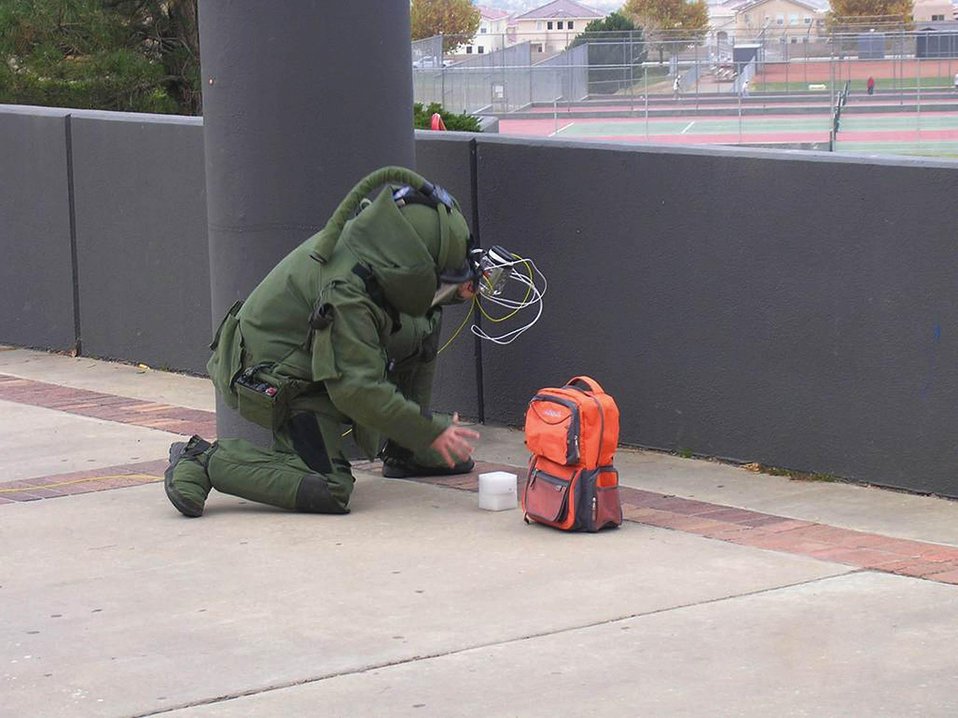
TECHNICIAN PARTICIPATES DURING AN OPERATION AMERICA WORKSHOP EXERCISE HOSTED BY SANDIA NATIONAL LABORATORY.

SIXTY-FIVE PEOPLE FROM 12 STATES, THE US MILITARY, AND CANADIAN POLICE AND ARMED FORCES PARTICIPATED IN A WORKSHOP SPONSORED BY DOE AND THE ALBUQUERQUE POLICE DEPARTMENT BOMB SQUAD. THE WORKSHOP ON ADVANCED BOMB-DISABLEMENT TECHNOLOGY FOR BOMB SQUAD PERSONNEL, IT CONSISTED OF TECHNICAL PRESENTATIONS AND TECHNIQUES WERE FOLLOWED BY LIVE RANGE DEMONSTRATIONS AND PARTICIPATION IN SCENARIO EXERCISES.